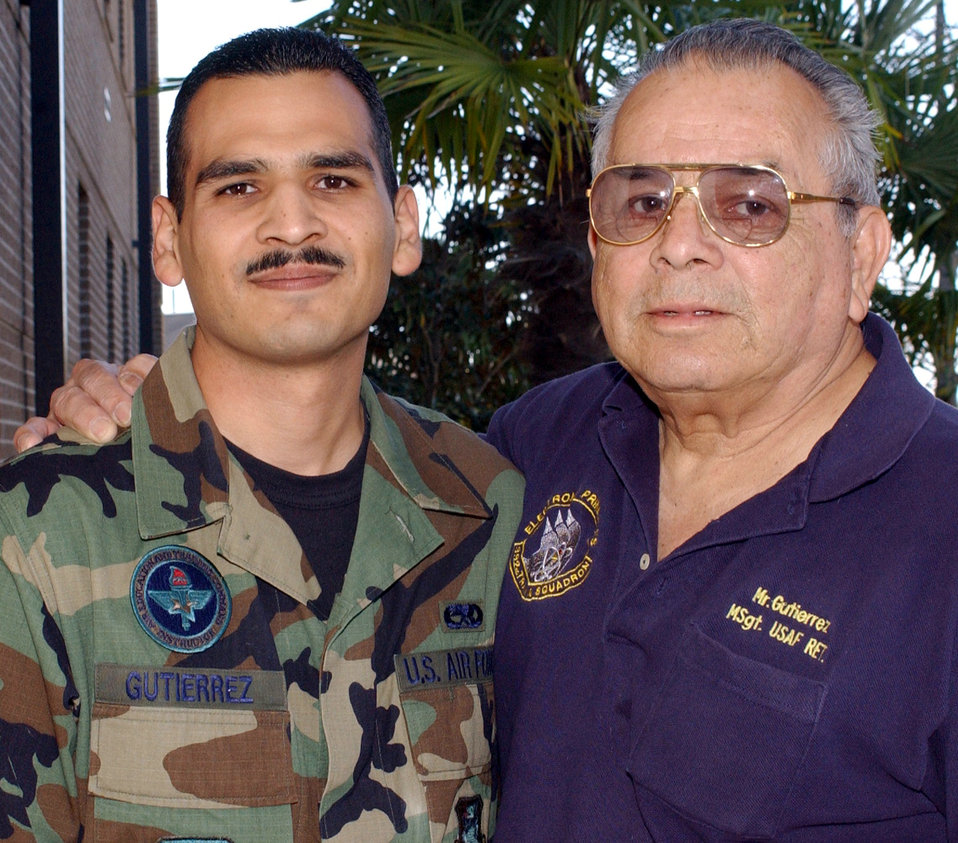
Like father, like son

KEESLER AIR FORCE BASE, Miss. -- Staff Sgt. Victor Gutierrez teaches the same course his father, Ernesto Gutierrez, taught years ago while on active duty. Sergeant Gutierrez is a computer, networking and cryptographic systems instructor in the 338th Training Squadron, and Mr. Gutierrez teaches electronic principles in the 332nd TRS.